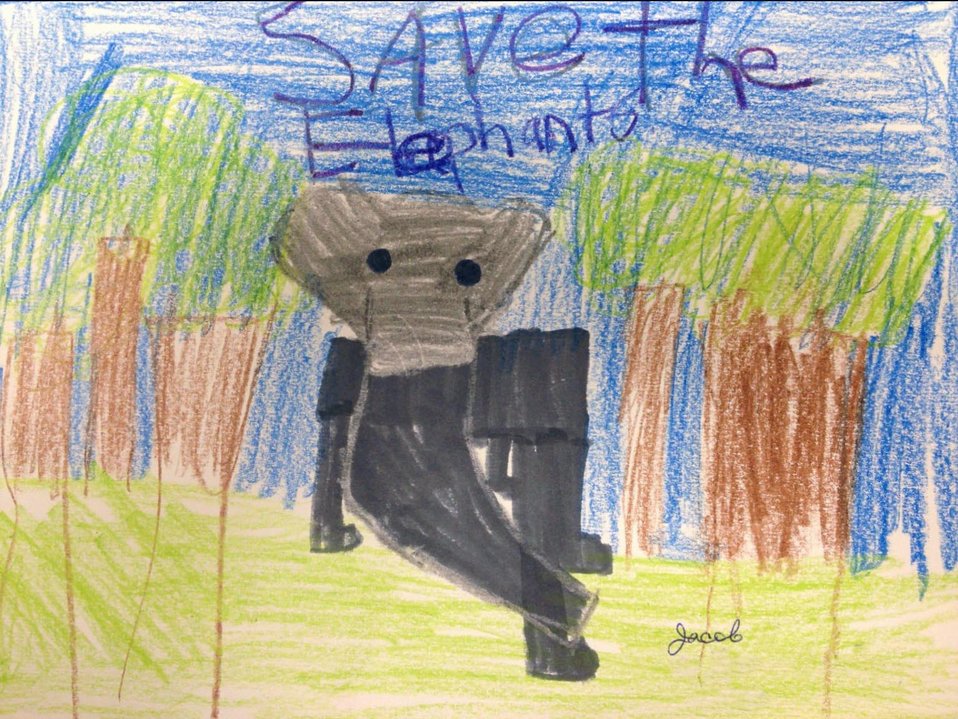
Drawing by Jacob